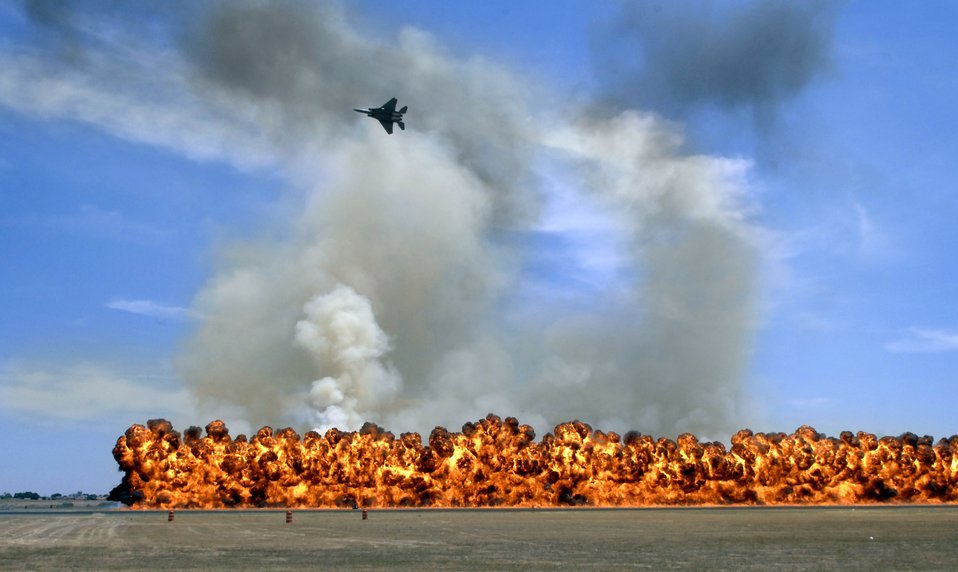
California Air Force Week

Pyrotechnics explode while an F-15 flies over to simulate an air-to-ground attack during the California Capital Air Show in Sacramento, Calif., on Jun. 9. The air show was the last event of Air Force Week California. The purpose of Air Force Week is to inform and educate the American public about the importance and roles of the Air Force in America's national defense. Over 50,000 people attended the air show featuring the Air Force Thunderbirds and numerous Air Force aircraft.